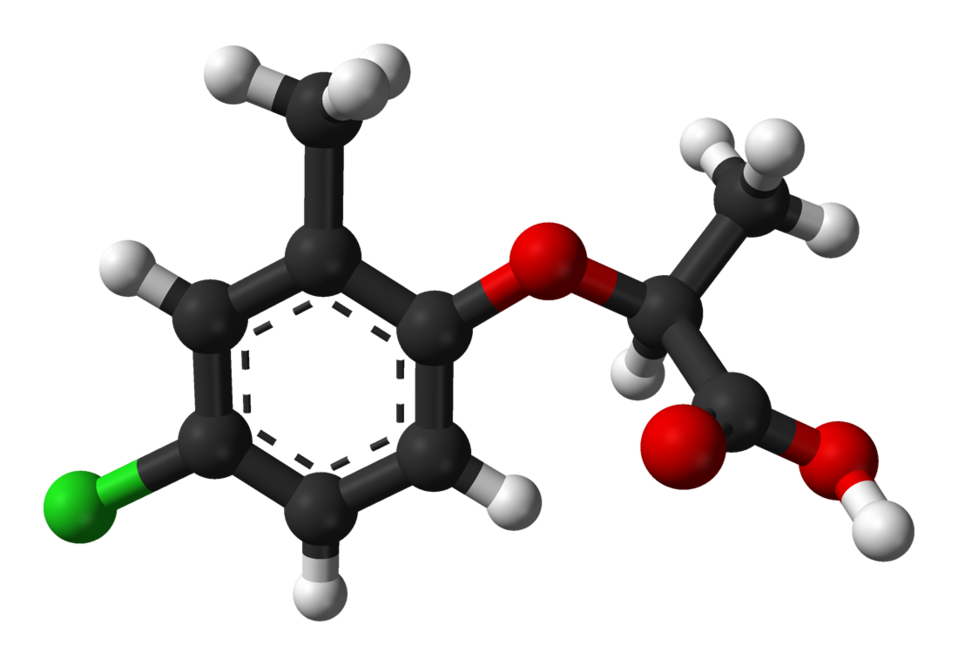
Ball-and-stick model of the (S)-(−)-mecoprop molecule, as found in the crystalline state. X-ray crystallographic data from G. Smith, C. H. L. Kennard, A. H. White and P. G. Hodgson (April 1980). '( -)-2-(4-Chloro-2-methylphenoxy)propionic acid (mecoprop)'. Acta Cryst. B36 (4): 992-994. DOI:10.1107/S0567740880005134.. Model constructed in CrystalMaker 8.1. Image generated in Accelrys DS Visualizer.